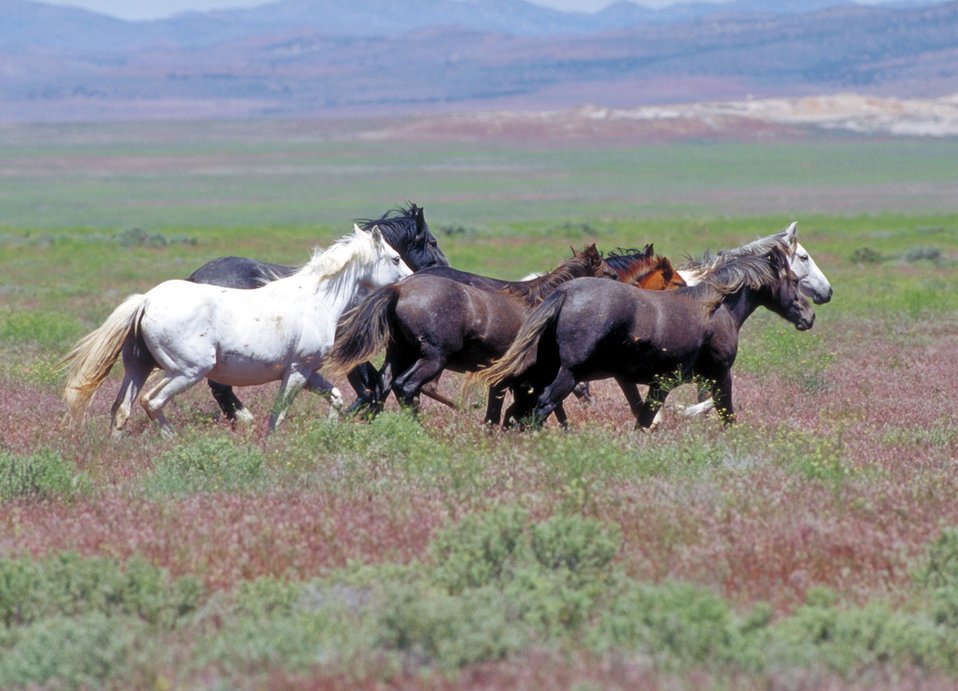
Onaqui Herd near Dugway, Utah.